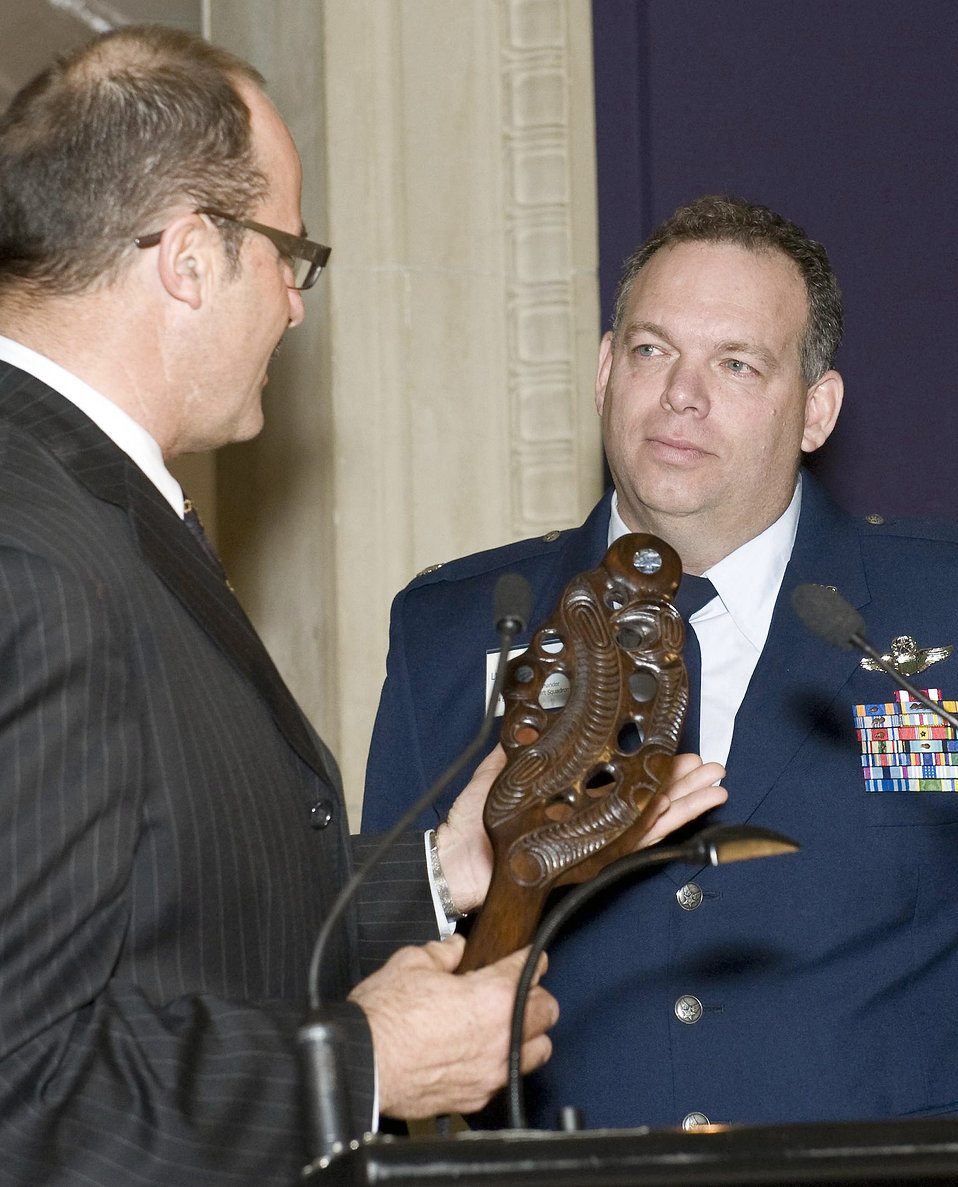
Deep Freeze Airman given Christchurch civic award

Lou Sanson, Antarctica New Zealand chief executive, presents Lt. Col. Jim McGann with a traditional Maori chief's weapon known as a Patu during a ceremony in Christchurch, New Zealand, Sept. 26. Colonel McGann, who leads C-17 Globemaster III operations in support of Operation Deep Freeze, was presented with the Christchurch Civic Award at the ceremony, becoming the first American to receive the honor.